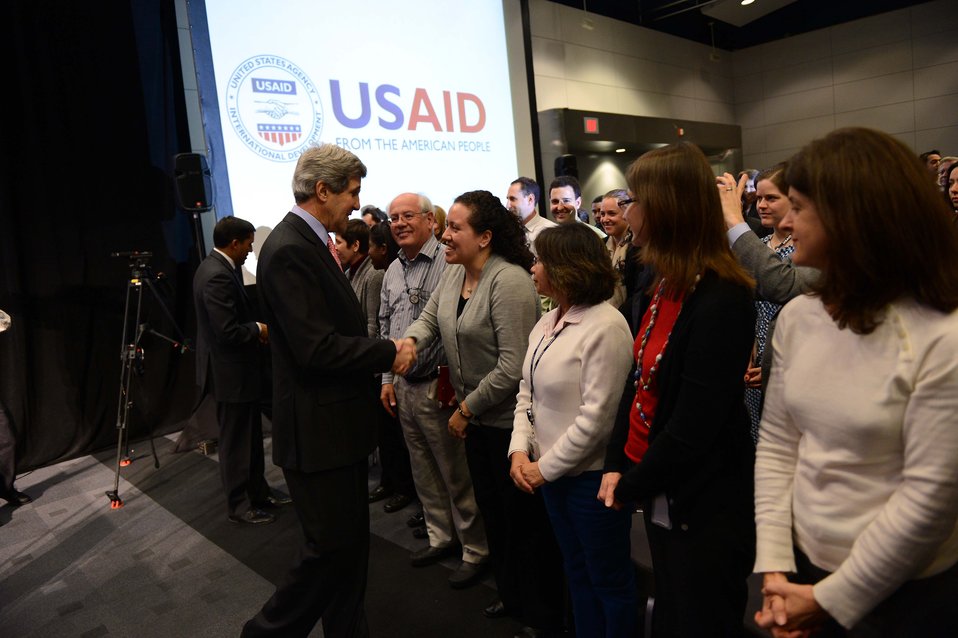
Secretary Kerry Speaks With USAID Employees

U.S. Secretary of State John Kerry speaks with U.S. Agency for International Development (USAID) employees at the Ronald Reagan Building in Washington, D.C., February 15, 2013.